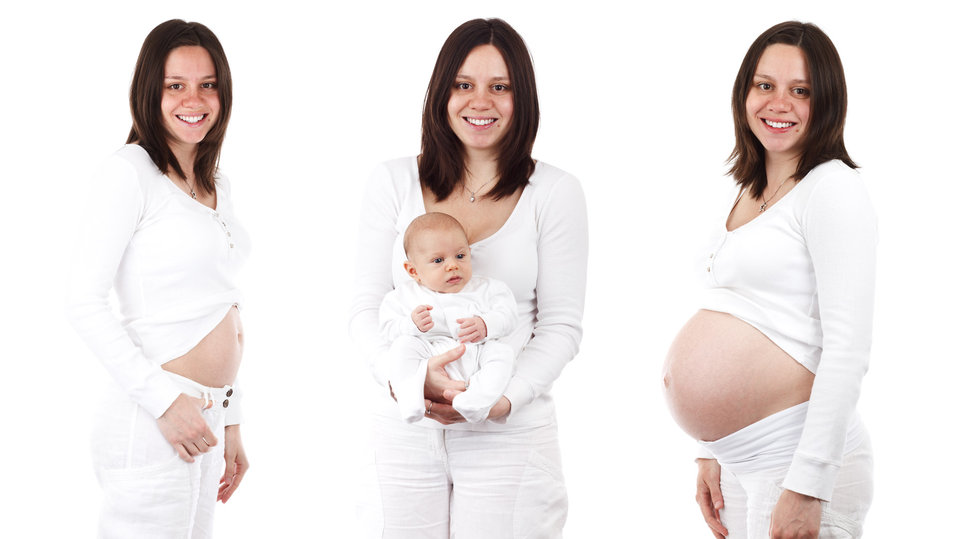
Pregnancy and newborn

Pregnant woman in a couple of stages of pregnancy and with holding a newborn isolated on white background.